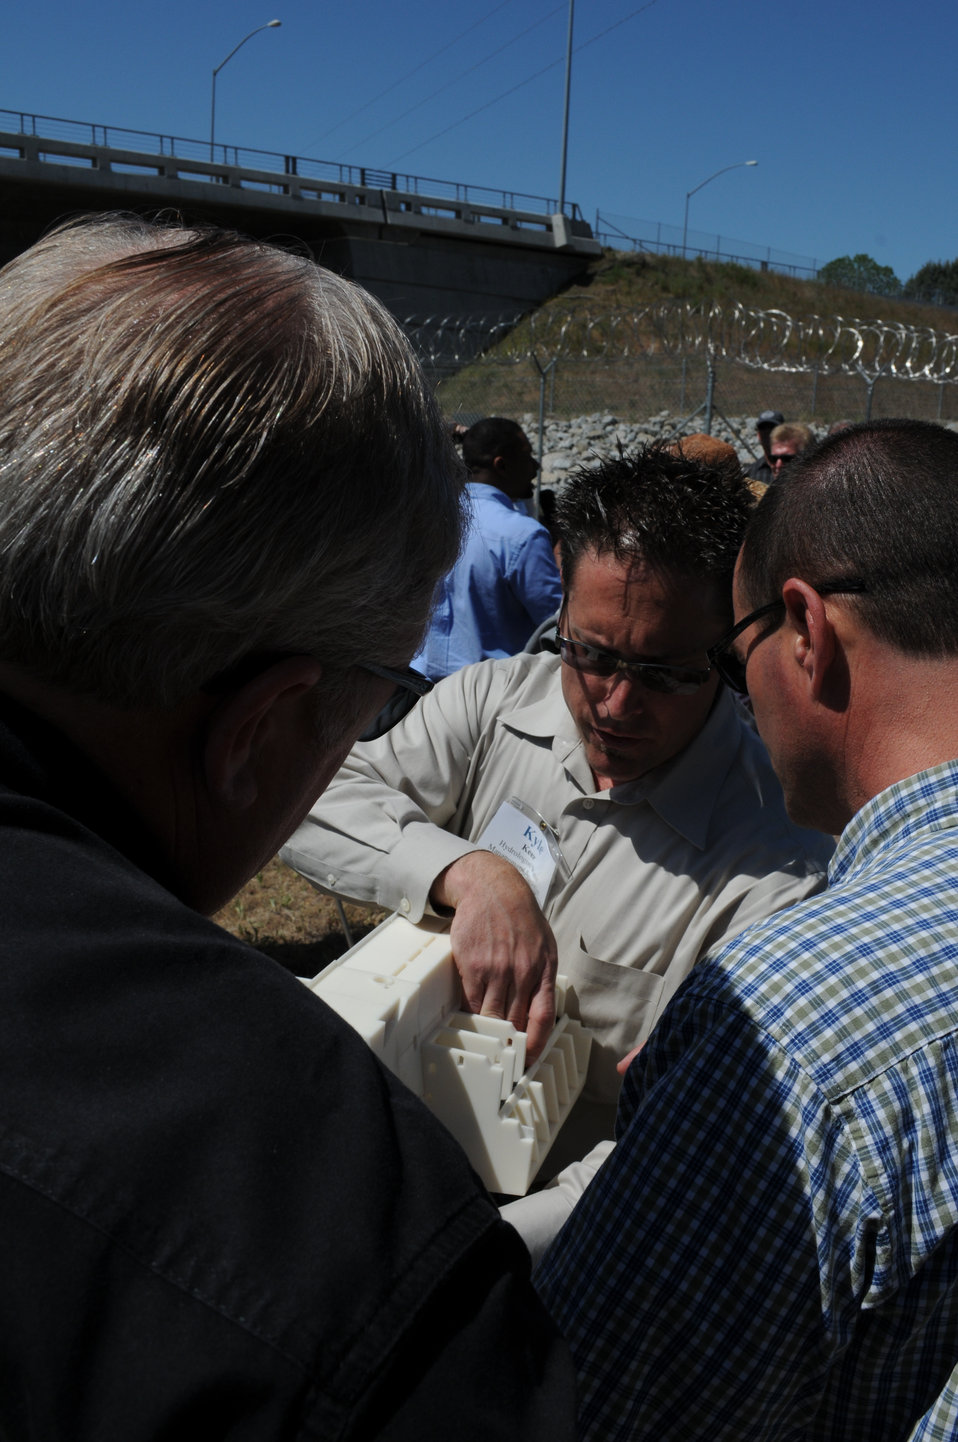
FOLSOM, Calif. (May 4, 2011) – Water manager Kyle Keer from the U.S. Army Corps of Engineers Sacramento District uses a scale model to discuss the operation of the soon-to-be-built auxiliary spillway at Folsom Dam to participants from the Water Education Foundation’s Flood Management tour here May 4. “It is important to be available for these kinds of events,” said Keer. “We want to explain the Corps’ role and how we coordinate and cooperate with other agencies. It is all very complicated, and these tours make it possible to see a lot at once.”